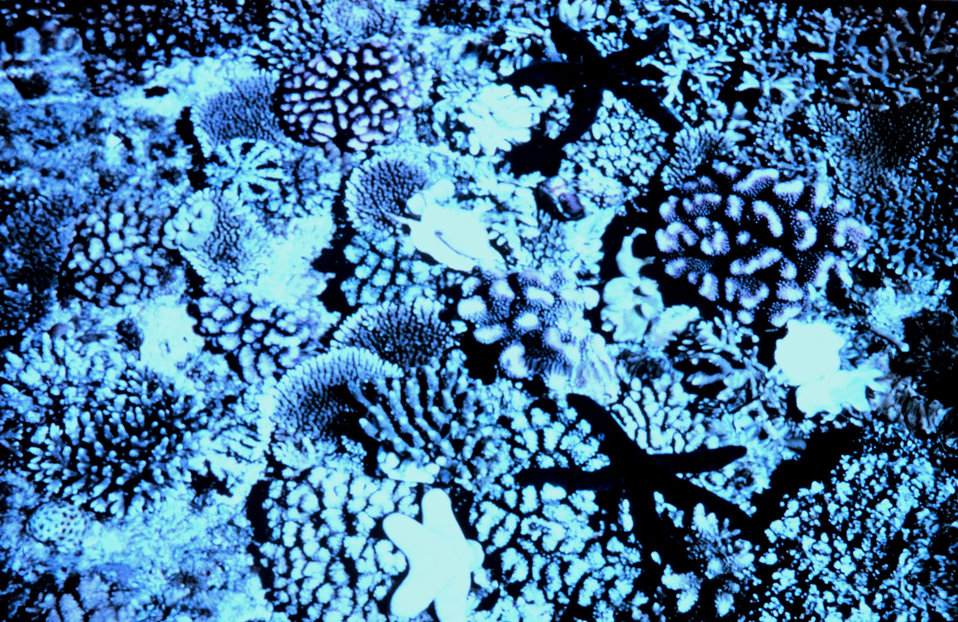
Patch reef with assorted corals.